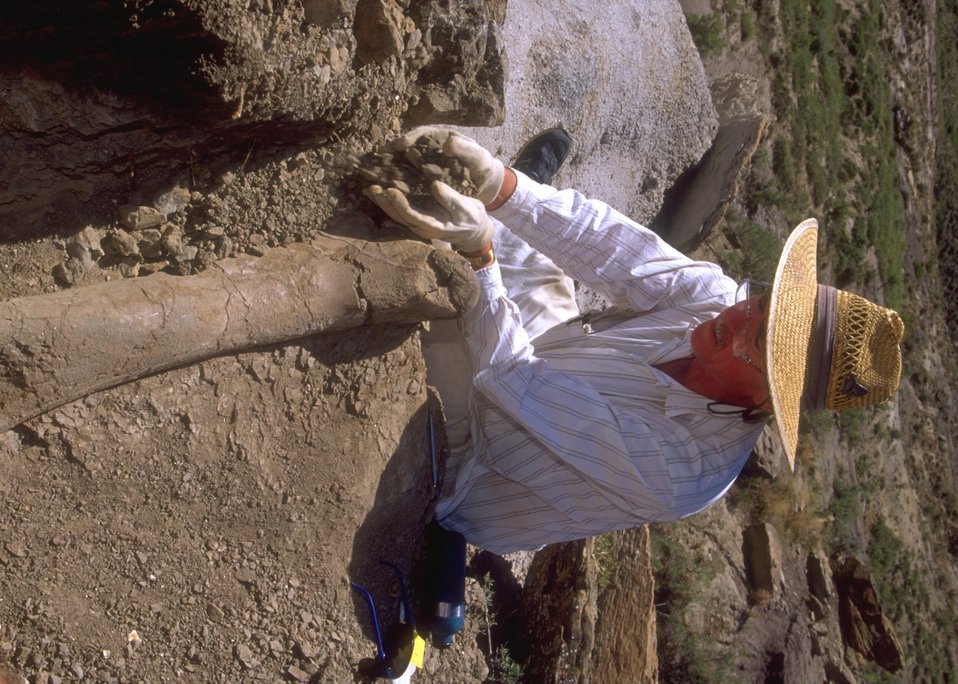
Paleontologist working a dig for dinosaur bones, Lance Creek Fossil Area, Newcastle Field Office.